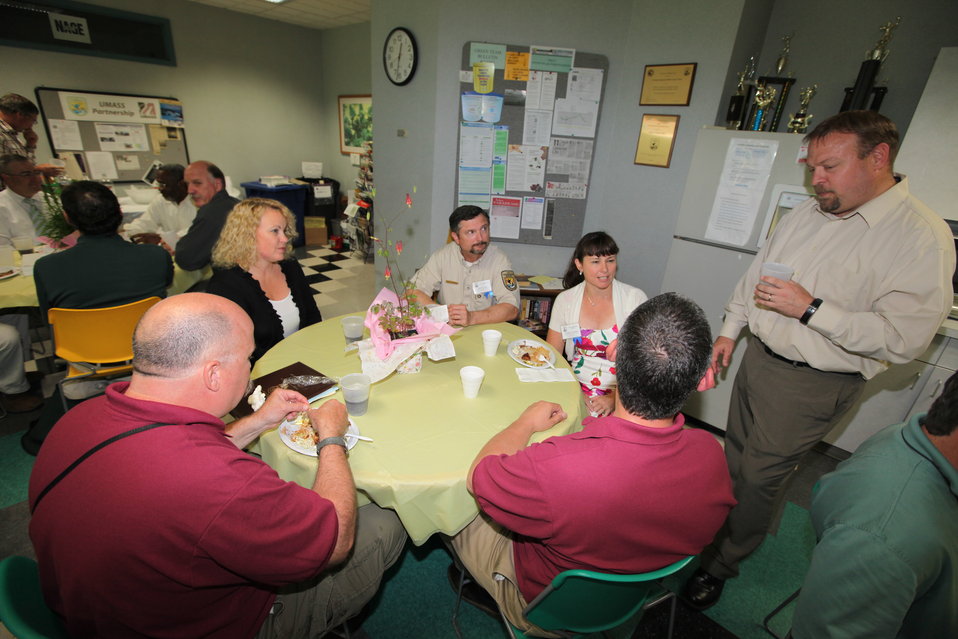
Northeast Region Employee Appreciation Awards

Luncheon